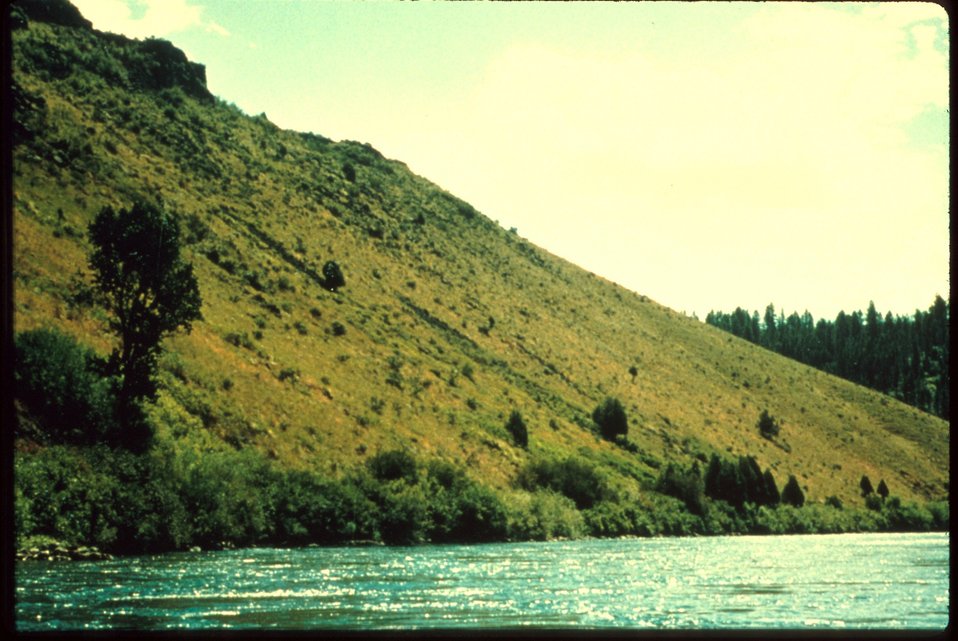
Leafy spurge on the South Fork of the Snake River Idaho vegetation Plants in BLM